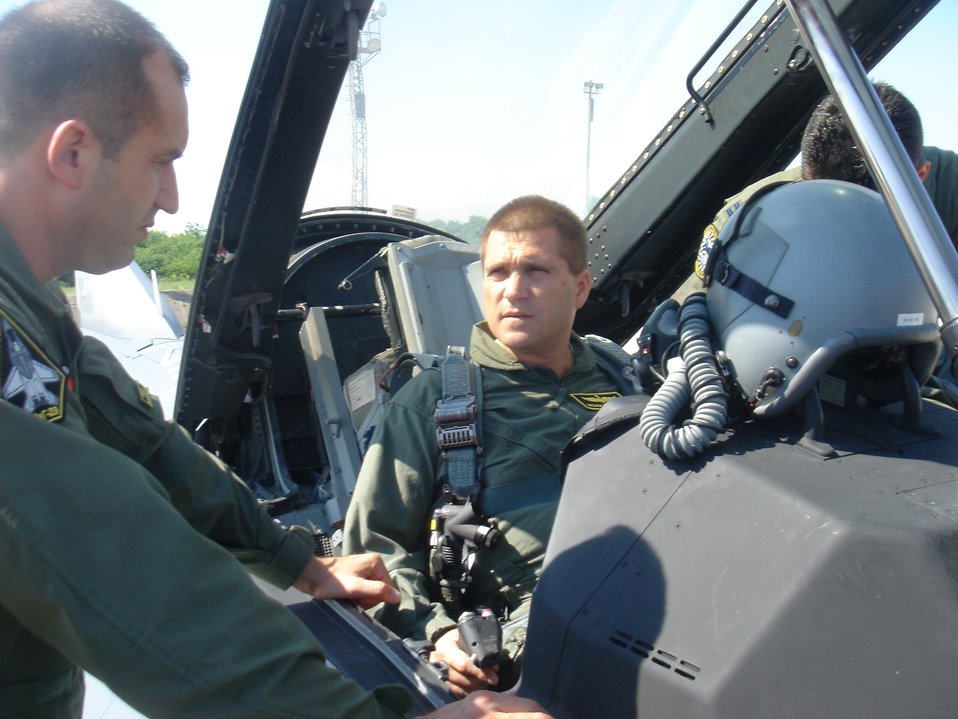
Bulgarian incentive flight

Bulgarian Defense Minister Nikolay Tsonev (left) talks with Bulgarian Gen. Rumen Radev before the defense minister takes a ride on a U.S. F-16 Fighting Falcon June 11 at Graf Ignatievo Air Base, Bulgaria. American aircrews and 10 F-16s from the 93rd Fighter Squadron at Homestead Air Reserve Base, Fla., are at Graf Ignatievo AB to particpate in a joint drill with 15 Bulgarian MiG-21 and MiG-29 fighters. MInister Tsenov visited the base to see how the joint drill was progressing. General Radev is the Graf Ignatievo AB commander.